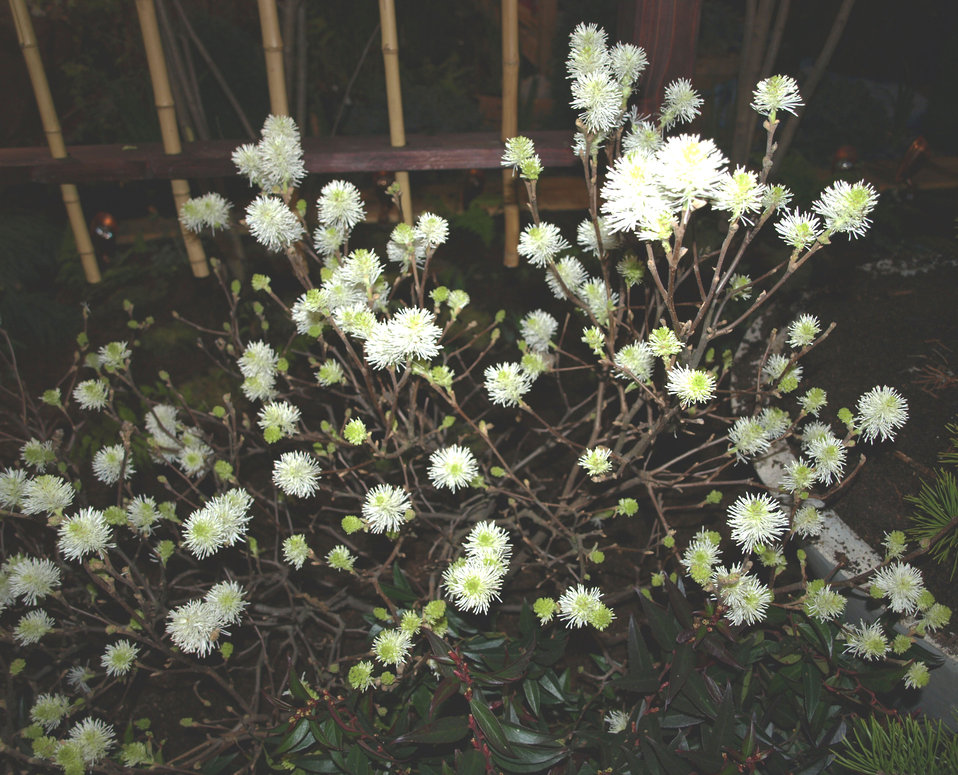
Witch alder

Fothergilla monticola (Witch alder), a native plant

Learn more about EPA’s Exhibit at the 2010 Philadelphia International Flower Show:
www.epa.gov/reg3esd1/garden/flower show.htm
www.epa.gov/reg3esd1/garden/flower show plants.htm
www.epa.gov/reg3esd1/garden/pdf/flowershow2010.pdf (6 pp, 864K)